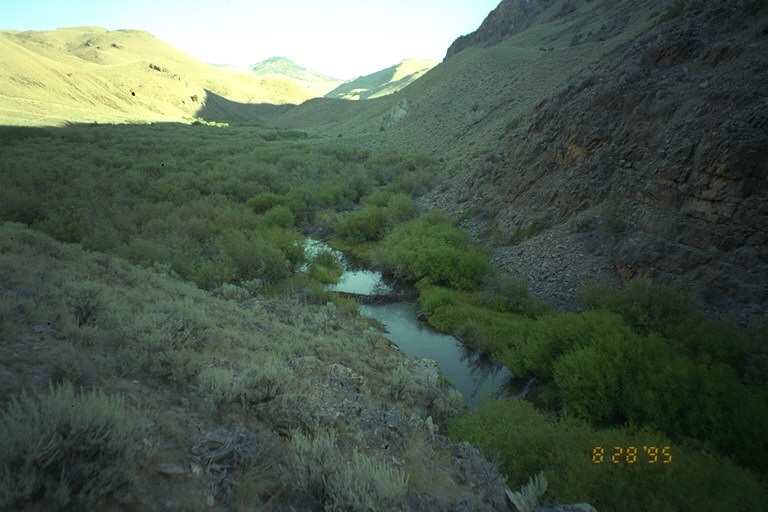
Riparian area Public Lands Salmon Field Office UCSC Upper Columbia Salmon Clearwater District